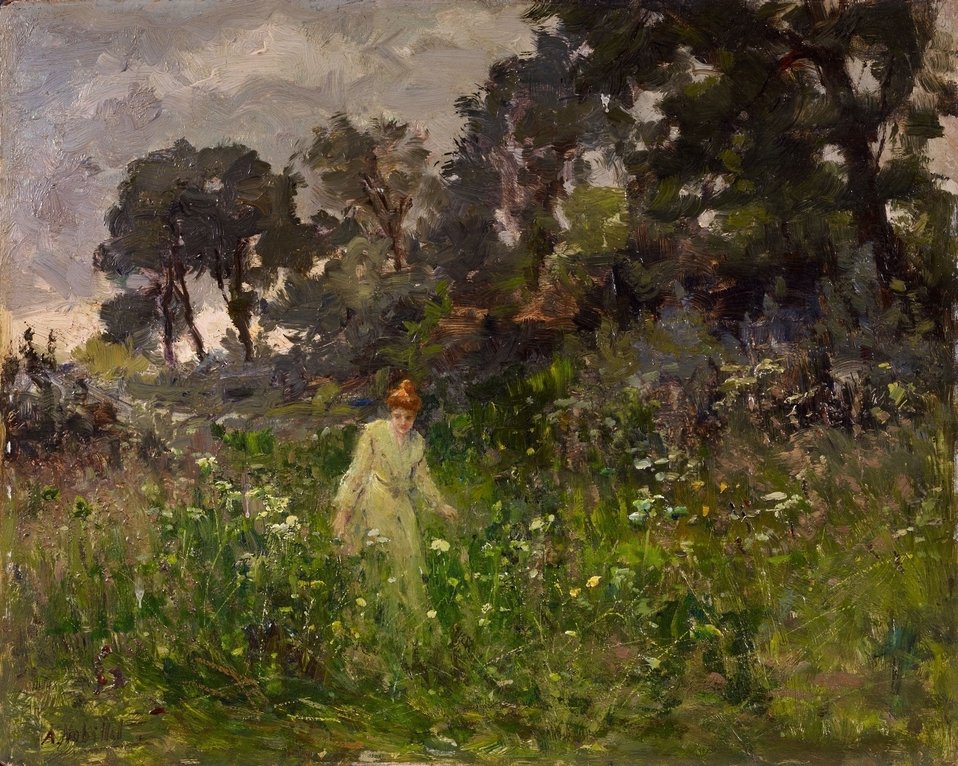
Deutsch: Landschaft mit junger Frau. Signiert unten links: A. Nobillet. Öl auf Holz. 32 x 40 cm